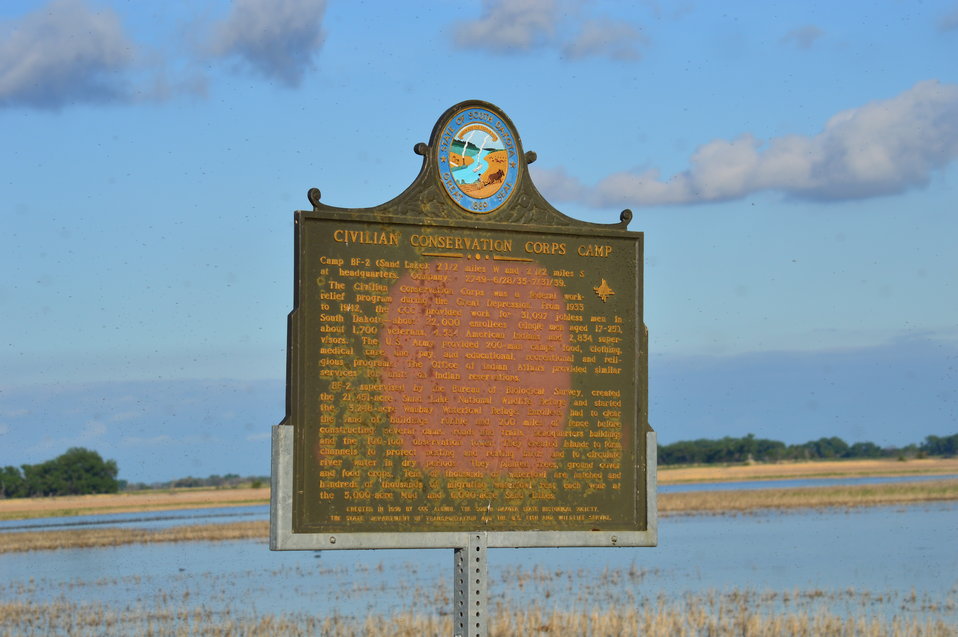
Historic Landmark - Civilian Conservation Corps Camp sign

Civilian Conservation Corps historic sign at Sand Lake National Wildlife Refuge